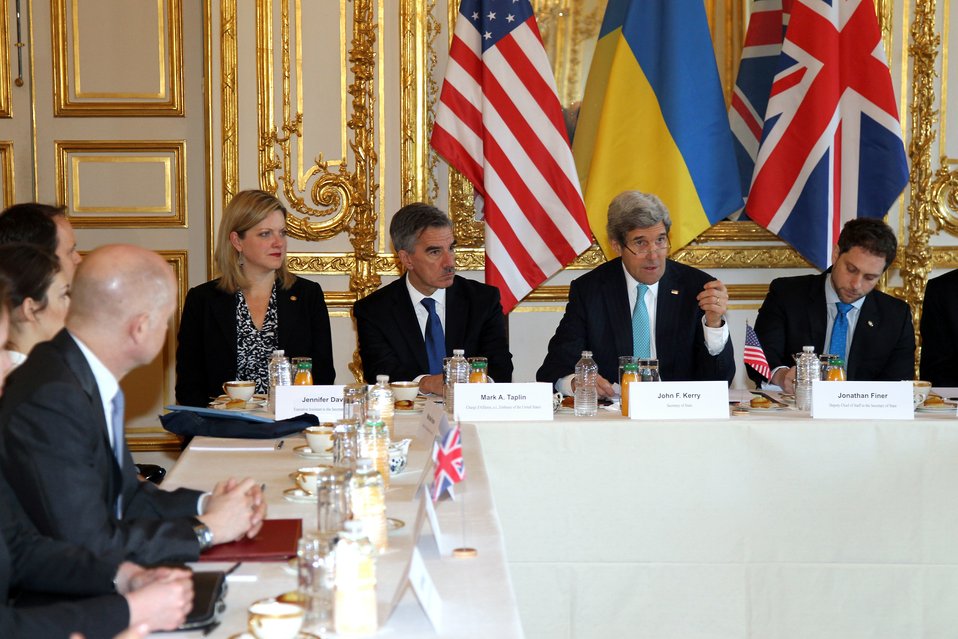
Secretary Kerry Addresses the Budapest Memorandum Ministerial on the Ukraine Crisis

U.S. Secretary of State John Kerry hosts the Budapest Memorandum Ministerial on the Ukraine crisis with Ukrainian Foreign Minister Andrii Deshchytsia, right, and British Foreign Secretary William Hague, left, at U.S. ambassador's residence in Paris, France, on March 5, 2014.